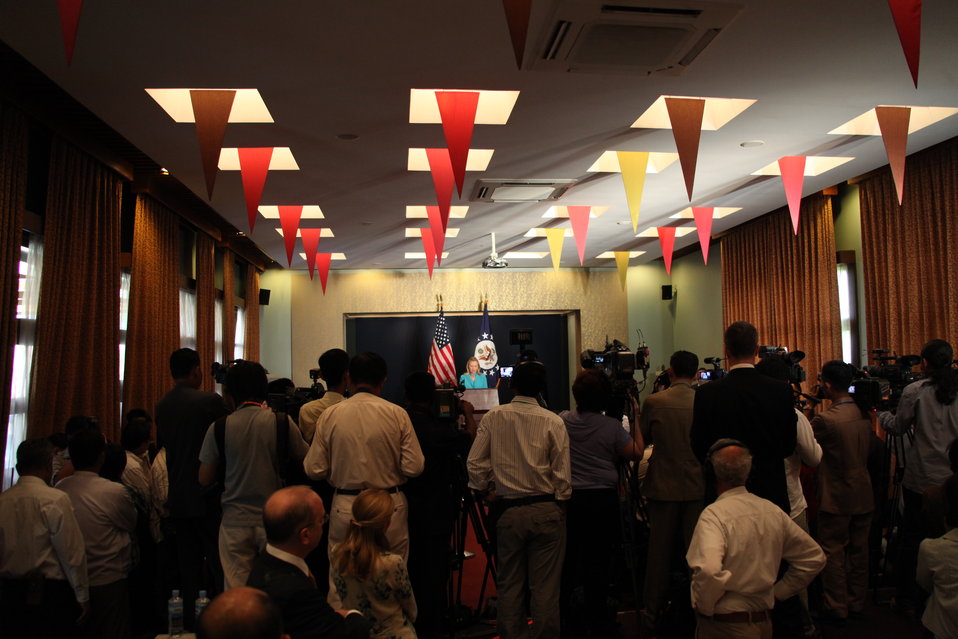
Secretary Clinton Addresses Burmese Press

U.S. Secretary of State Hillary Rodham Clinton addresses Burmese and international press in Nay Pyi Taw, Burma, on December 1, 2011.